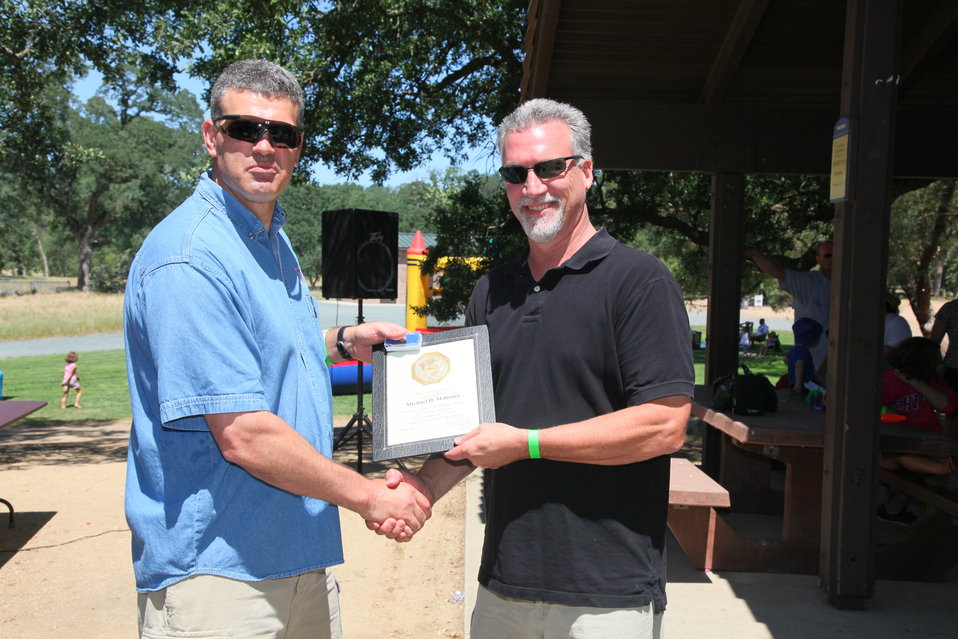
2011 Annual Picnic